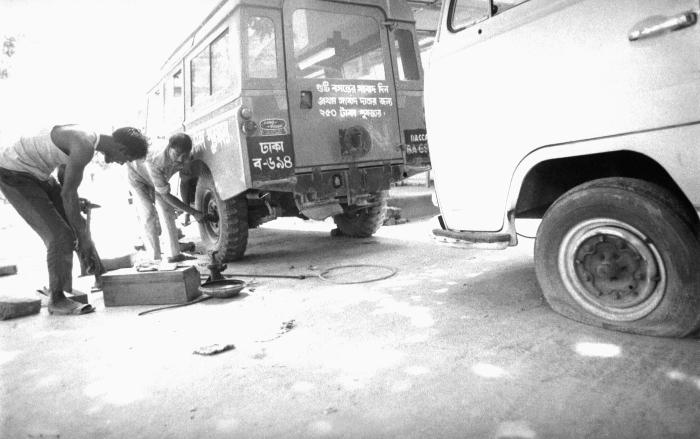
These two mechanics were photographed while they were repairing the left rear tire on a smallpox eradication team Mahendra jeep. This image was part of a series provided by Dr. Stan Foster, and captured by Pierre Claquin, M.D., B.A.C., who at the time was a member of the World Health Organization's Smallpox Eradication Program. It was part of a series photographed by former E.I.S. officer, Stanley O. Foster M.D., M.P.H., and was one of a series entitled 'The Story of One Smallpox Jeep', which depicted the travails faced by the jeep, and its occupants of public health practitioners, as they road through the Bangladesh countryside in an attempt to eradicate smallpox from the country.